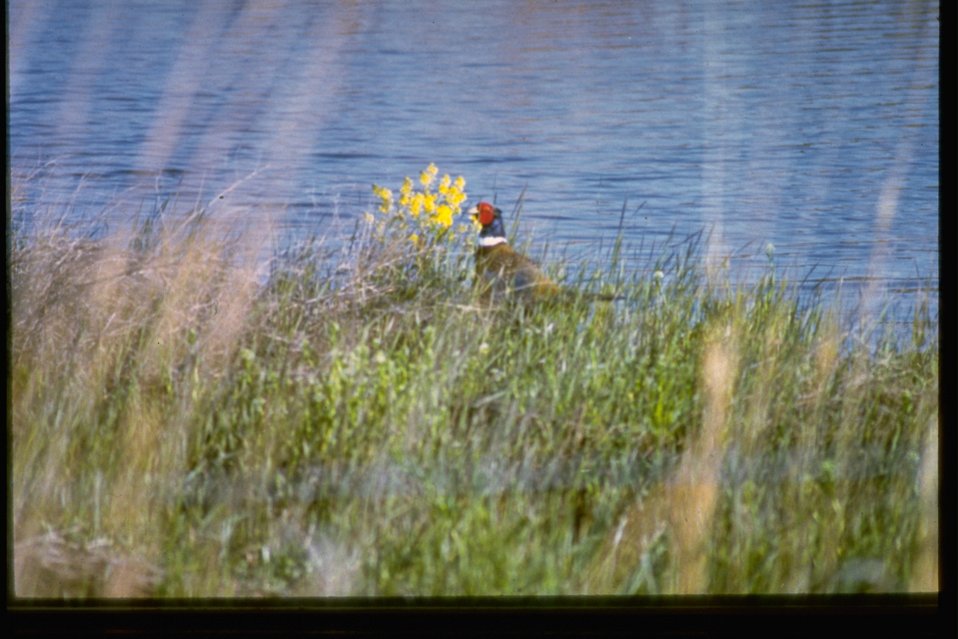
A Pheasant standing next to a flower along the Deschutes River.